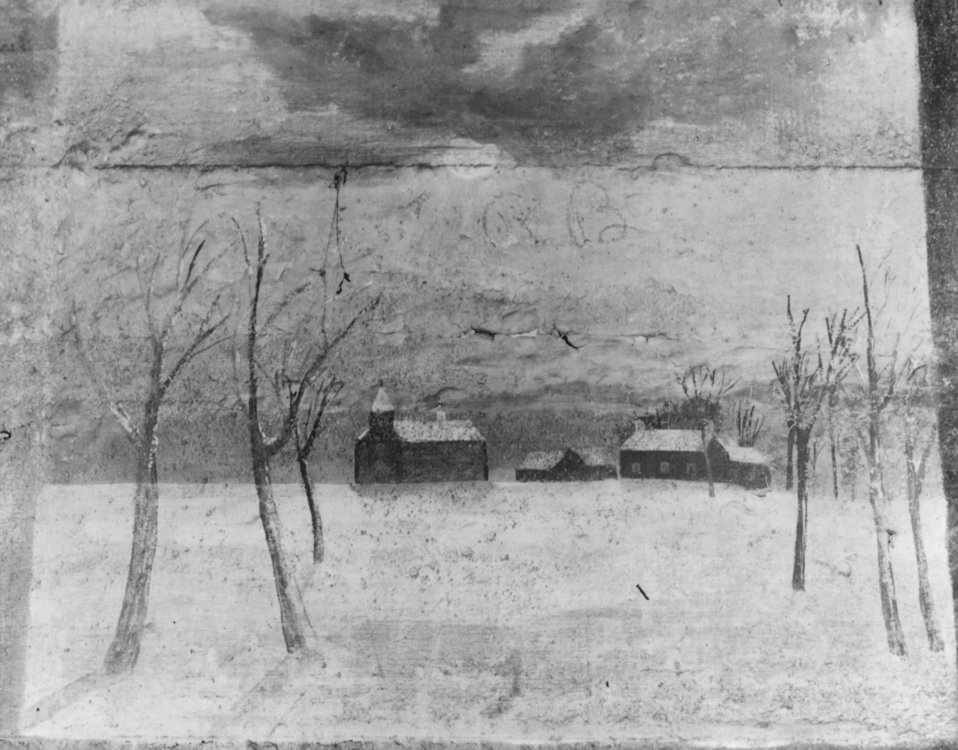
Early settlers at Oak Ridge